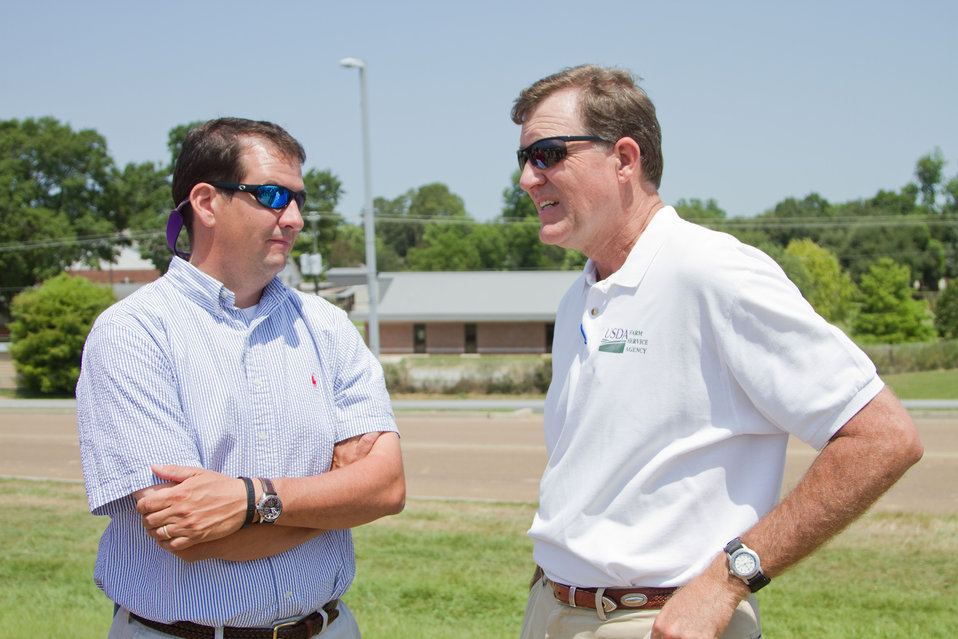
Farmer Noble Guedon (left) speaks with Mississippi Farm Service Agency District Director William Parish (right), after an outreach event held on Thursday, May 19, 2011, at the Vidalia, LA, to talk about the farming concerns in Adams County, MS where Guedon is a FSA board member.